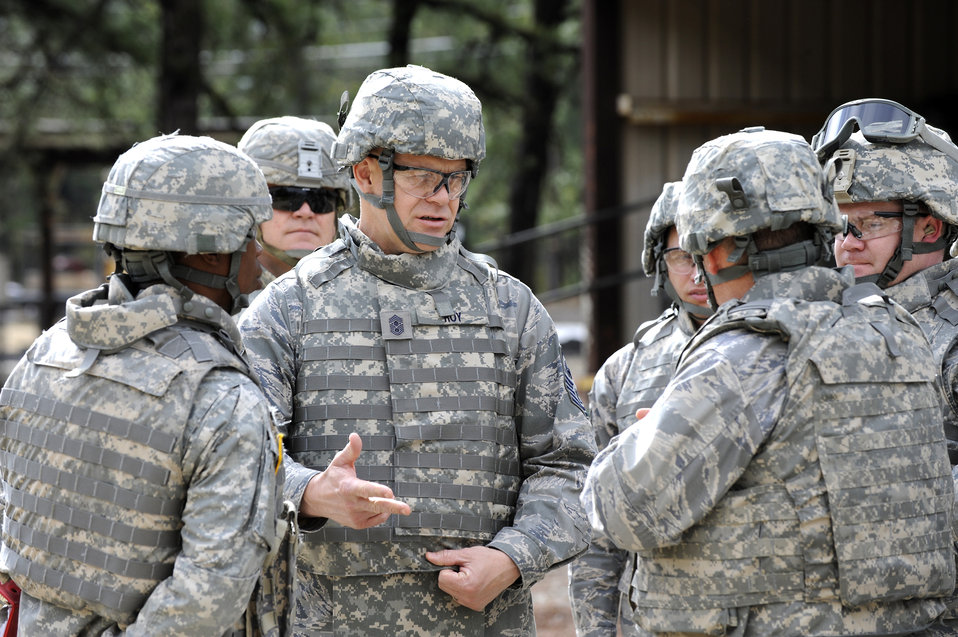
Senior leader experiences pre-deployment training

Chief Master Sgt. of the Air Force James A. Roy takes the opportunity to ask questions and talk with class leaders while visiting a combat training skills training class April 27, 2010, at Joint Base McGuire-Dix-Lakehurst, N.J.